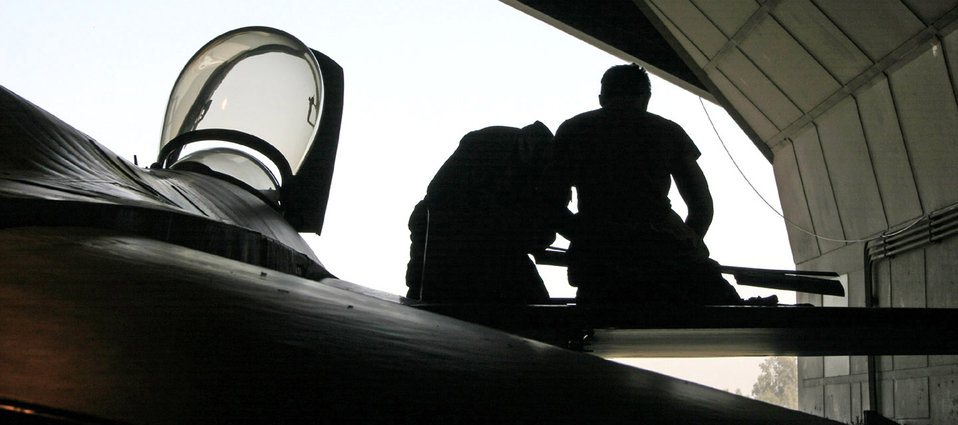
Airpower summary for Sept. 28, 2007

Maintainers at Balad Air Base, Iraq, work on an Air Force aircraft to keep it ready to support the coalition mission. Coalition aircraft fly hundreds of missions in support of Operation Enduring Freedom and Operation Iraqi Freedom.